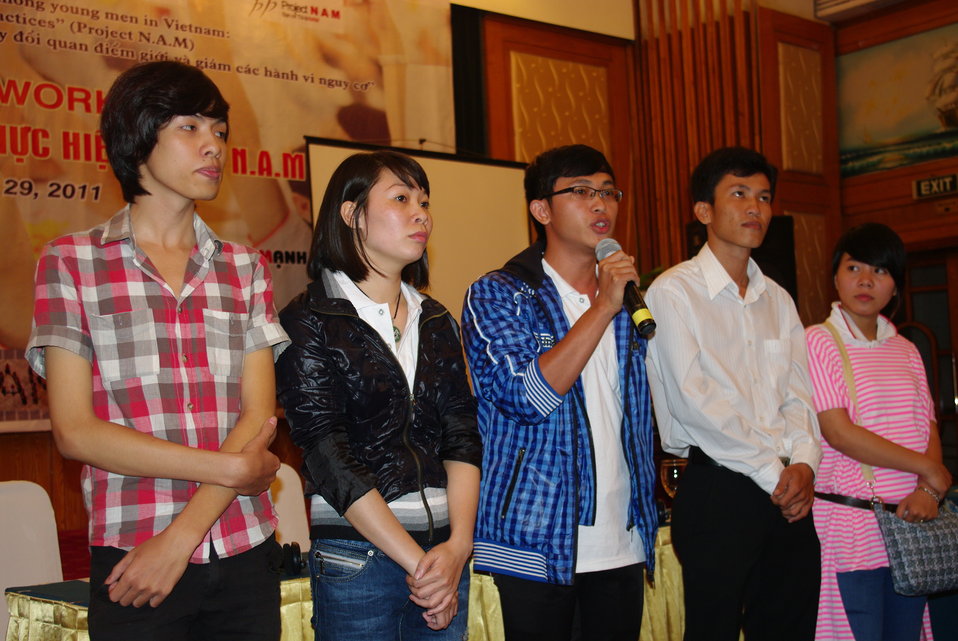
USAID Supports HIV Awareness among Street Youth and Young Men

Trainers and peer educators tell their stories on November 29, 2011, in Hanoi, Vietnam